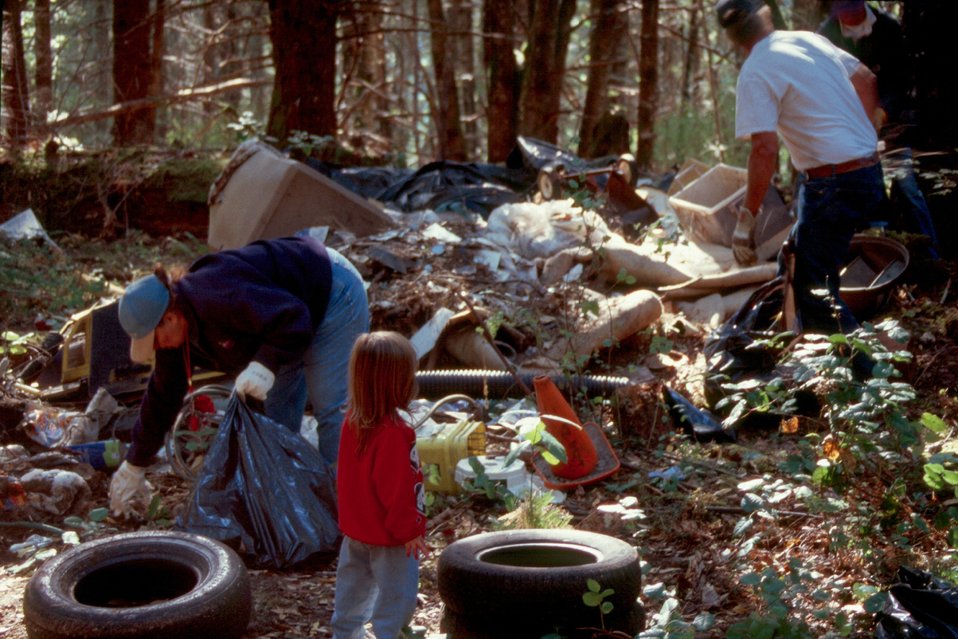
Junction City Jeepers clean up a hidden trash site on BLM lands